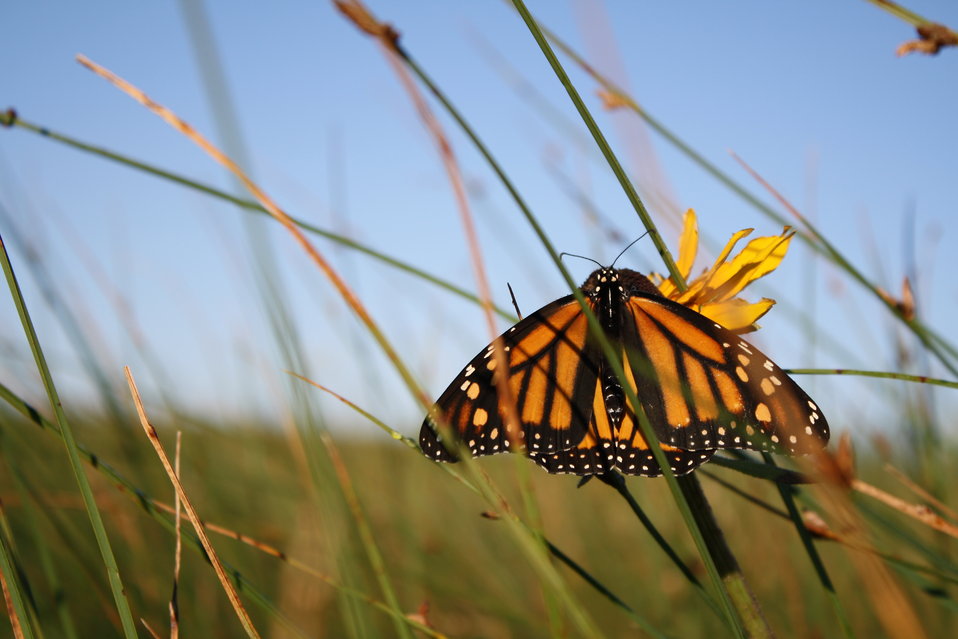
Monarch Butterfly

This Monarch butterfly (Danaus plexippus) was found resting on a native prairie flower, Black-eyed Susan (Rudbeckia hirta) at Chase Lake National Wildlife Refuge, ND.